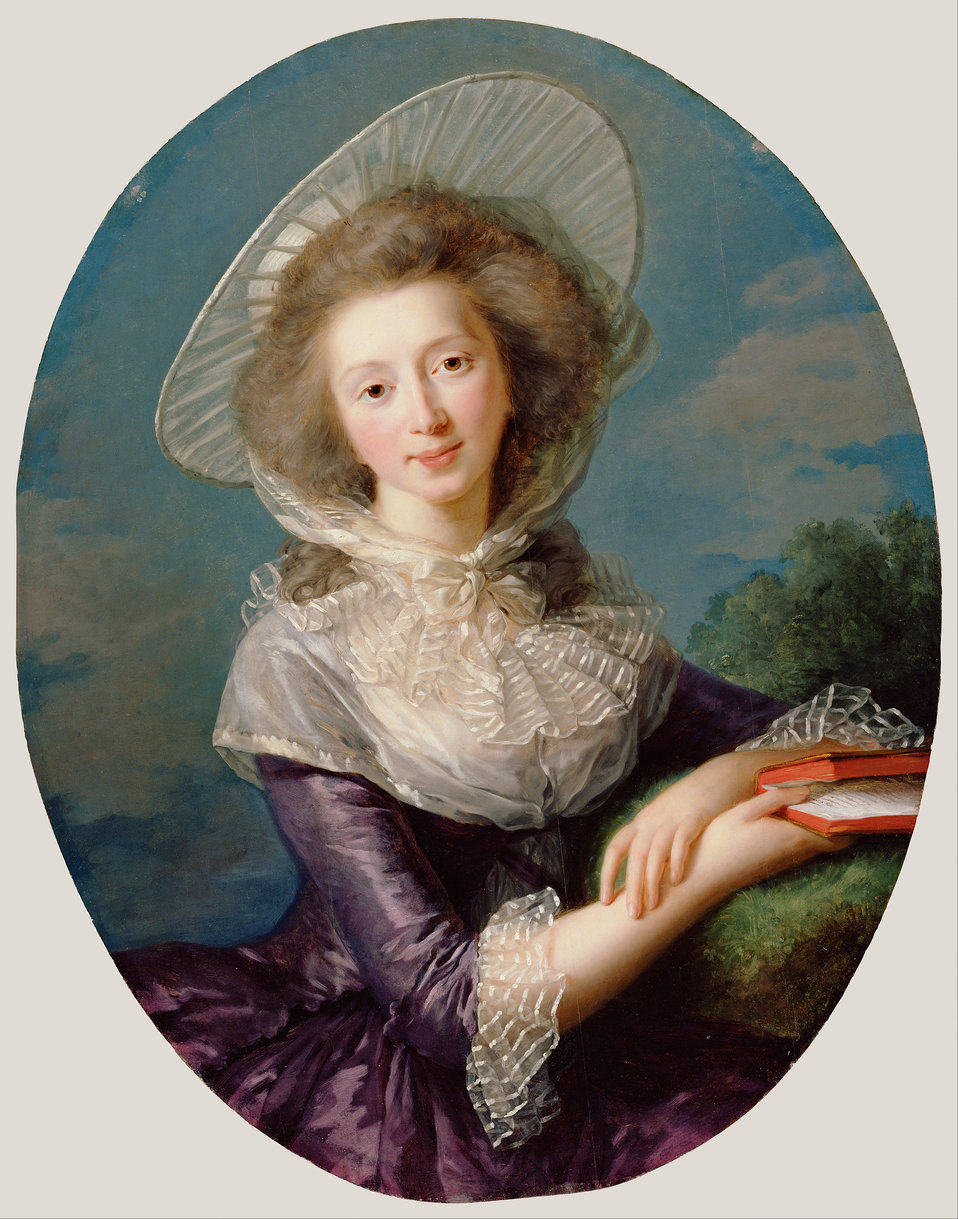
Élisabeth Louise Vigée Le Brun - The Vicomtesse de Vaudreuil - Google Art Project